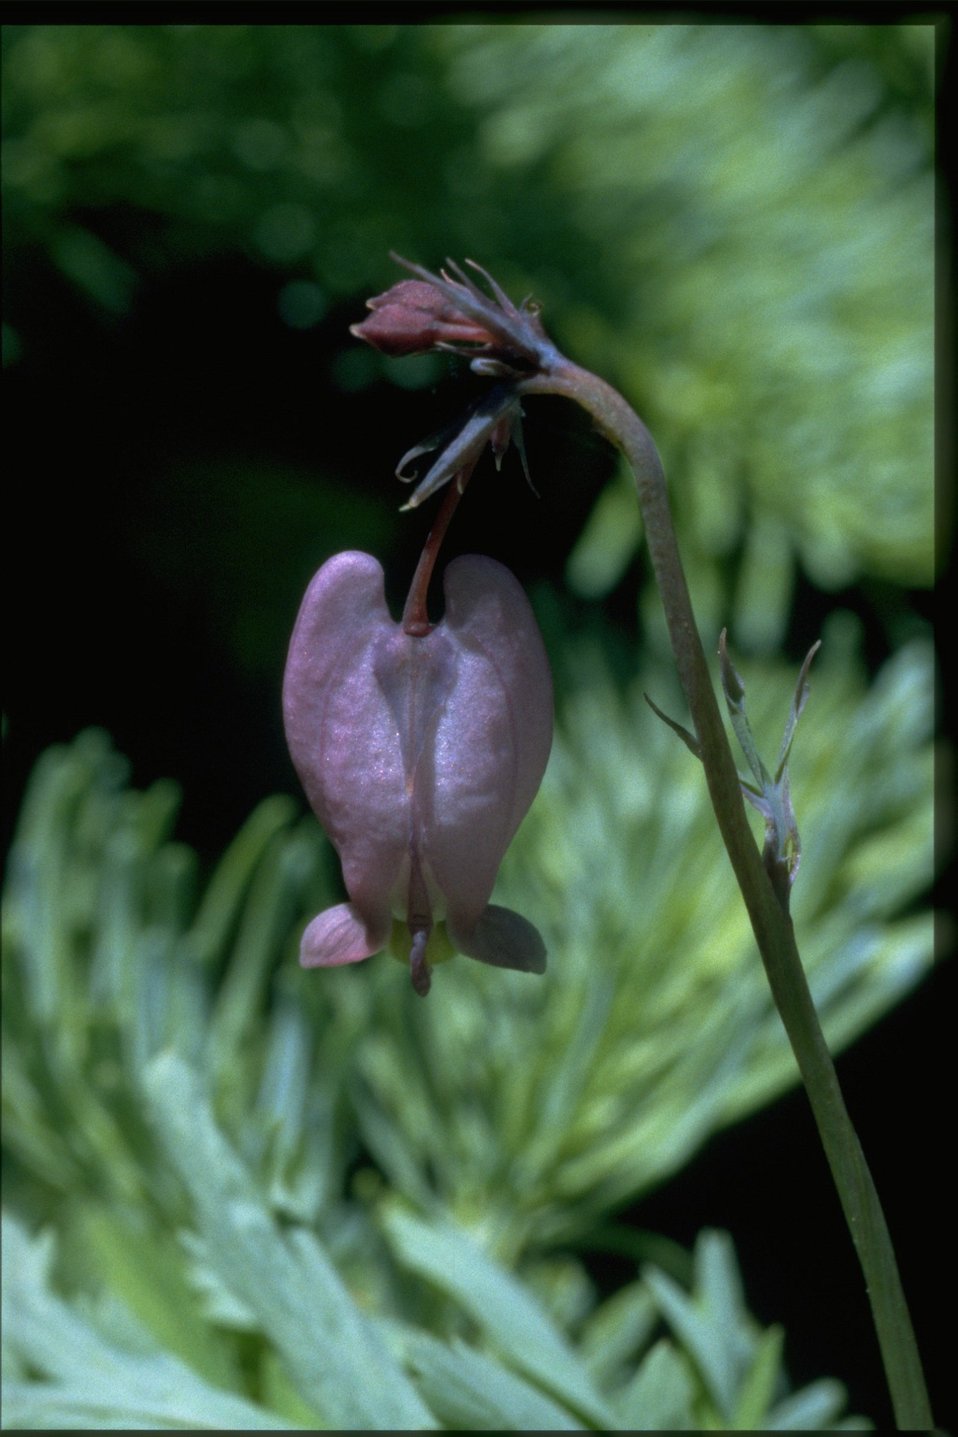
Closeup shot of Dicentra formosa.